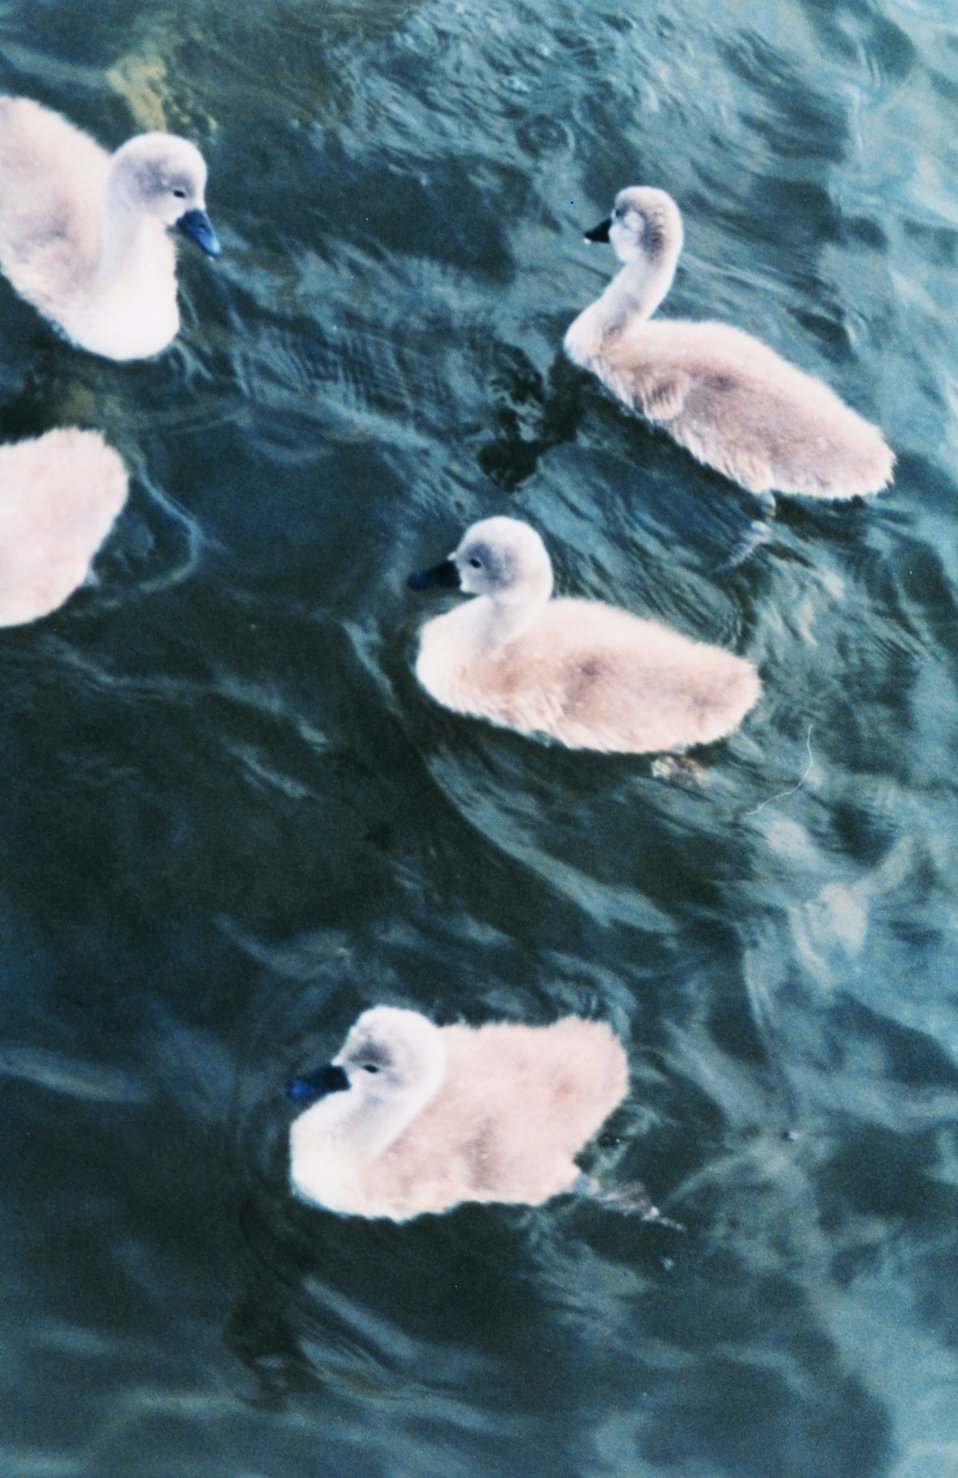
5 mute swan cygnets. Mute swans are an agressive invasive species. There are now over 3,000 mute swans in the Maryland portion of the Chesapeake Bay.